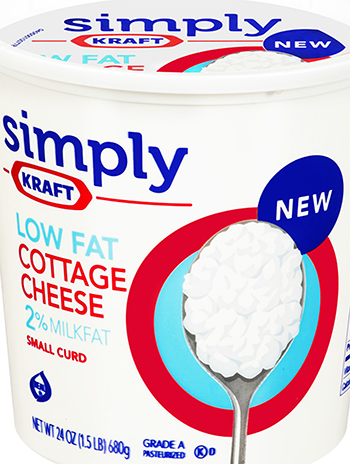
RECALLED – Cottage Cheese products

May 17, 2014 – Product Recall – Kraft Foods Group Voluntarily Recalls Select Cottage Cheese Products Due to Out-of-Standard Storage Temperatures
Certain Knudsen Cottage Cheese, Breakstone’s Cottage Cheese, Simply Kraft Cottage Cheese and Daily Chef Cottage Cheese Products Included in the Recall
.